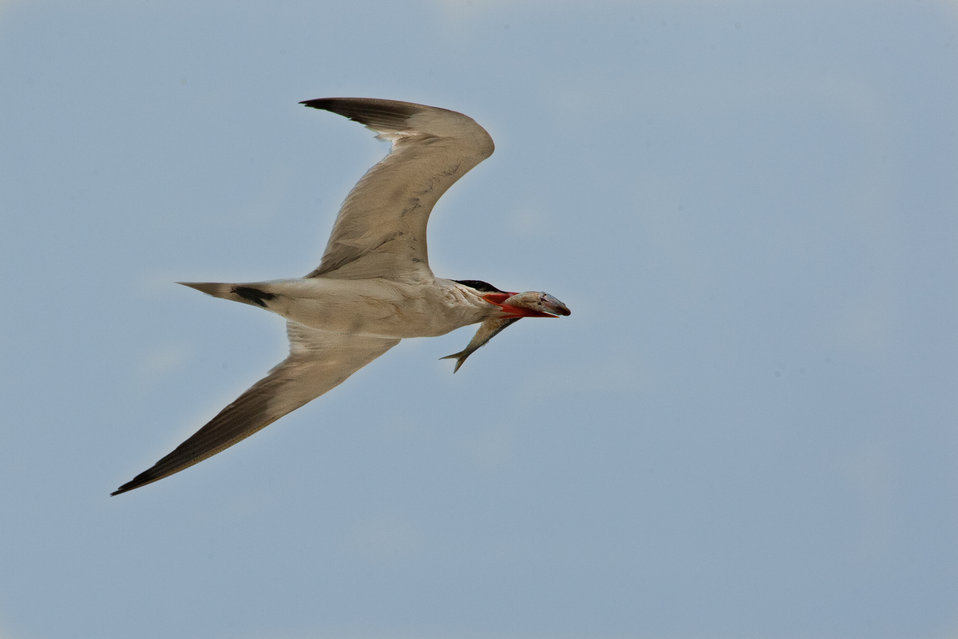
Great Catch!

An adult California Least tern brings a robust fish back to its nest on the dunes to feed its chicks. Or, the tern could be possibly bringing it to a mate, to impress him/her!